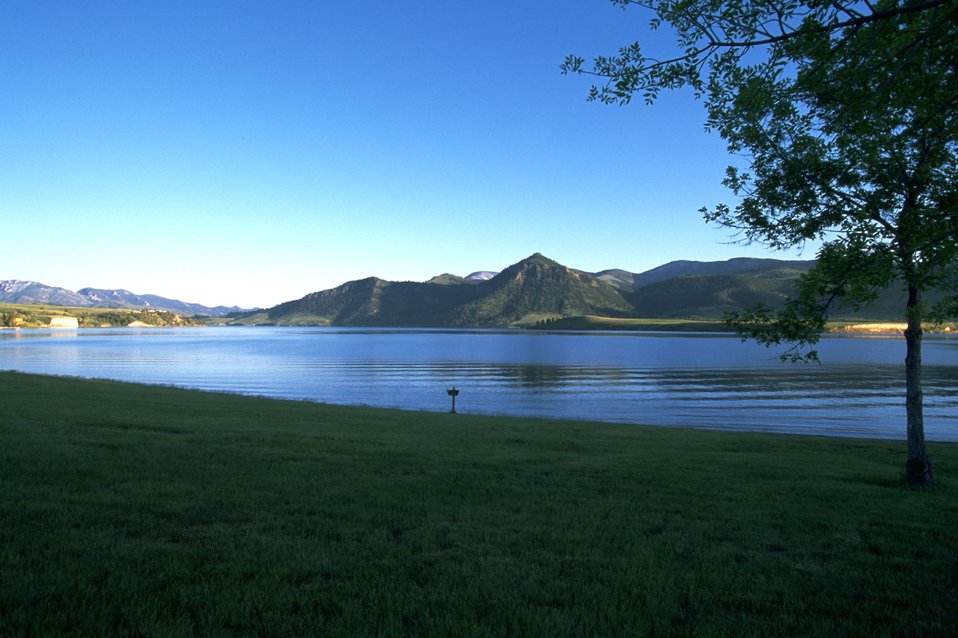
Holter Lake in the late afternoon light